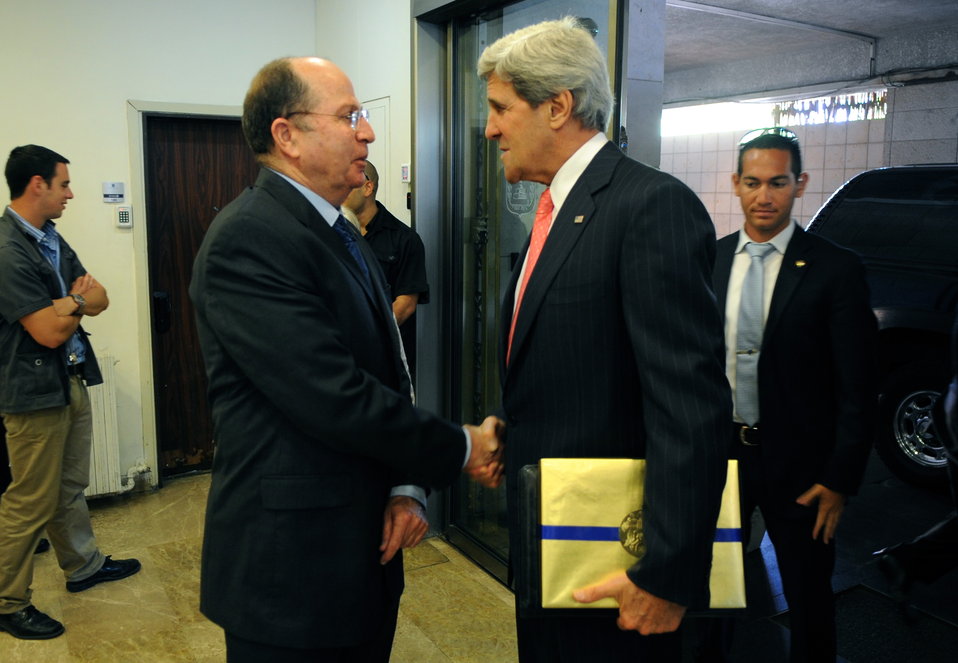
Secretary Kerry is Welcomed by Israeli Defense Minister Yaalon

U.S. Secretary of State John Kerry is welcomed by Israeli Defense Minister Moshe Yaalon prior to his meeting with Israeli Prime Minister Benjamin Netanyahu in Jerusalem on May 23, 2013.